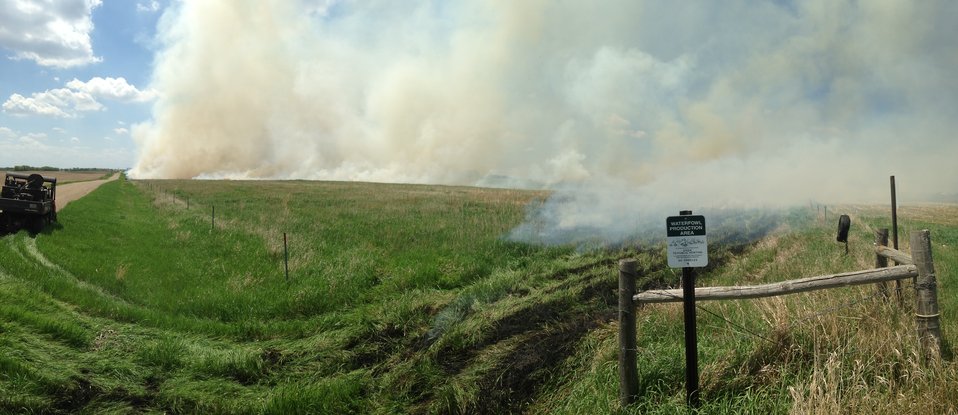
Lundgren WPA Prescribed Fire

Prescribed fire is a management tool that is used to maintain the vigor of a prairie. As with grazing, native prairie plants adapted to the frequent fires that raged across the Great Plains. These fires were historically started by lightning strikes and burned many miles of uninterrupted prairie. Fire is one of the best management tools for weakening non-native species. It removes the accumulated litter layer, stimulates new plant growth, and can be used to prepare ground for restoration.